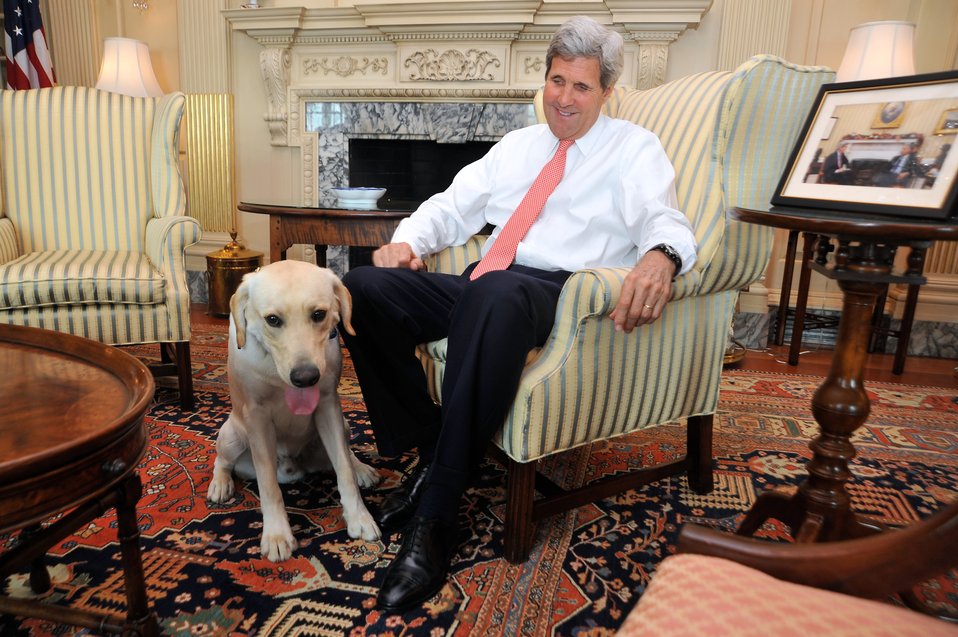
Secretary Kerry Wishes Ben the Dog a Happy First Birthday

U.S. Secretary of State John Kerry wishes his dog, Ben, an Earth Day baby, a happy first birthday, at the U.S. Department of State in Washington, D.C., on April 22, 2014.